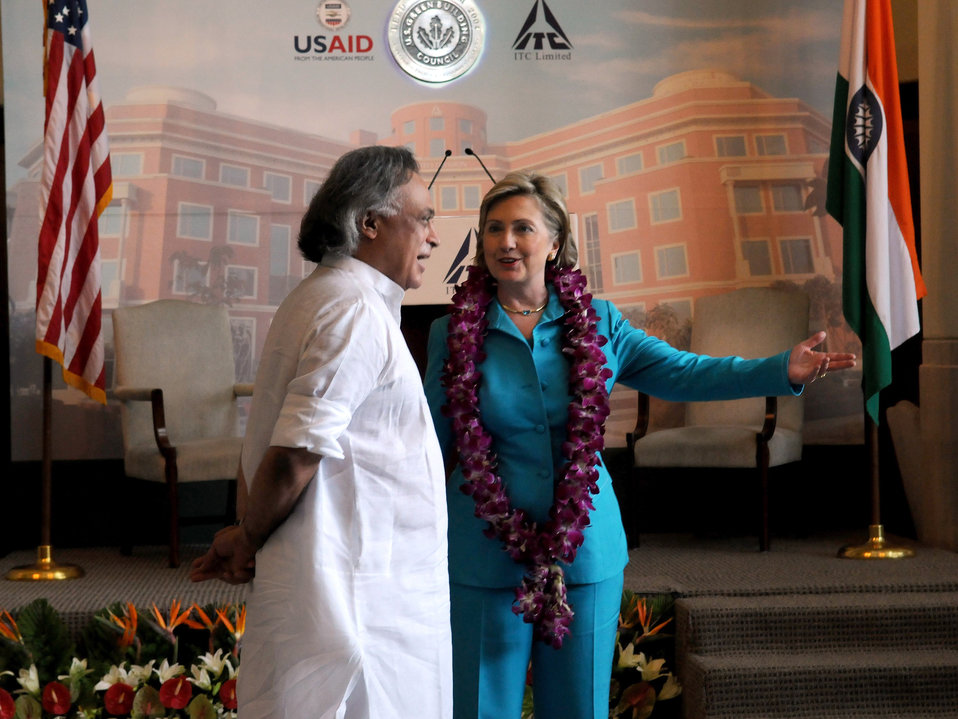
Secretary Clinton Visits ITC Green Center

U.S. Secretary of State Hillary Rodham Clinton is greeted by Minister for Forests and Environment Jairam Ramesh at the ITC Green Center in Gurgaon, outside of New Delhi, India July 19, 2009.